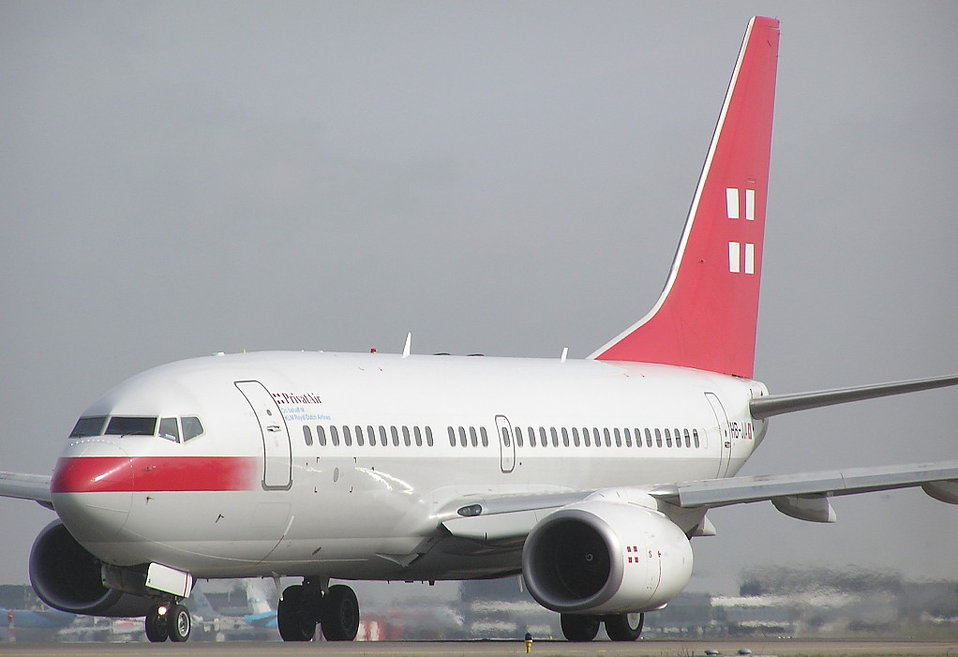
Nederlands: PrivatAir Boeing 737-700 voor KLM